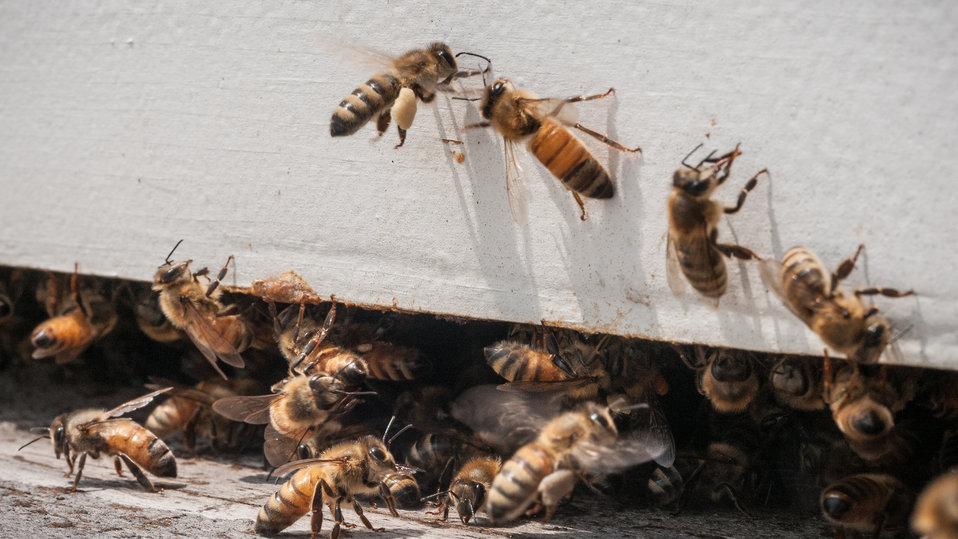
Honey bee with 'saddlebags' of pollenatached to thier hind legs return to the U.S. Department of Agriculture People's Garden apiary, atop the headquarters' Whitten Building in Washington, D.C., on Wednsday, May 22, 2013. Plants within about two miles have pollen that bees will gather on their legs to bring back to the hive for food. The activity of gathering from many flowers before returning moves pollen from plant to plant. Bees provide one of the several types pollination methods.